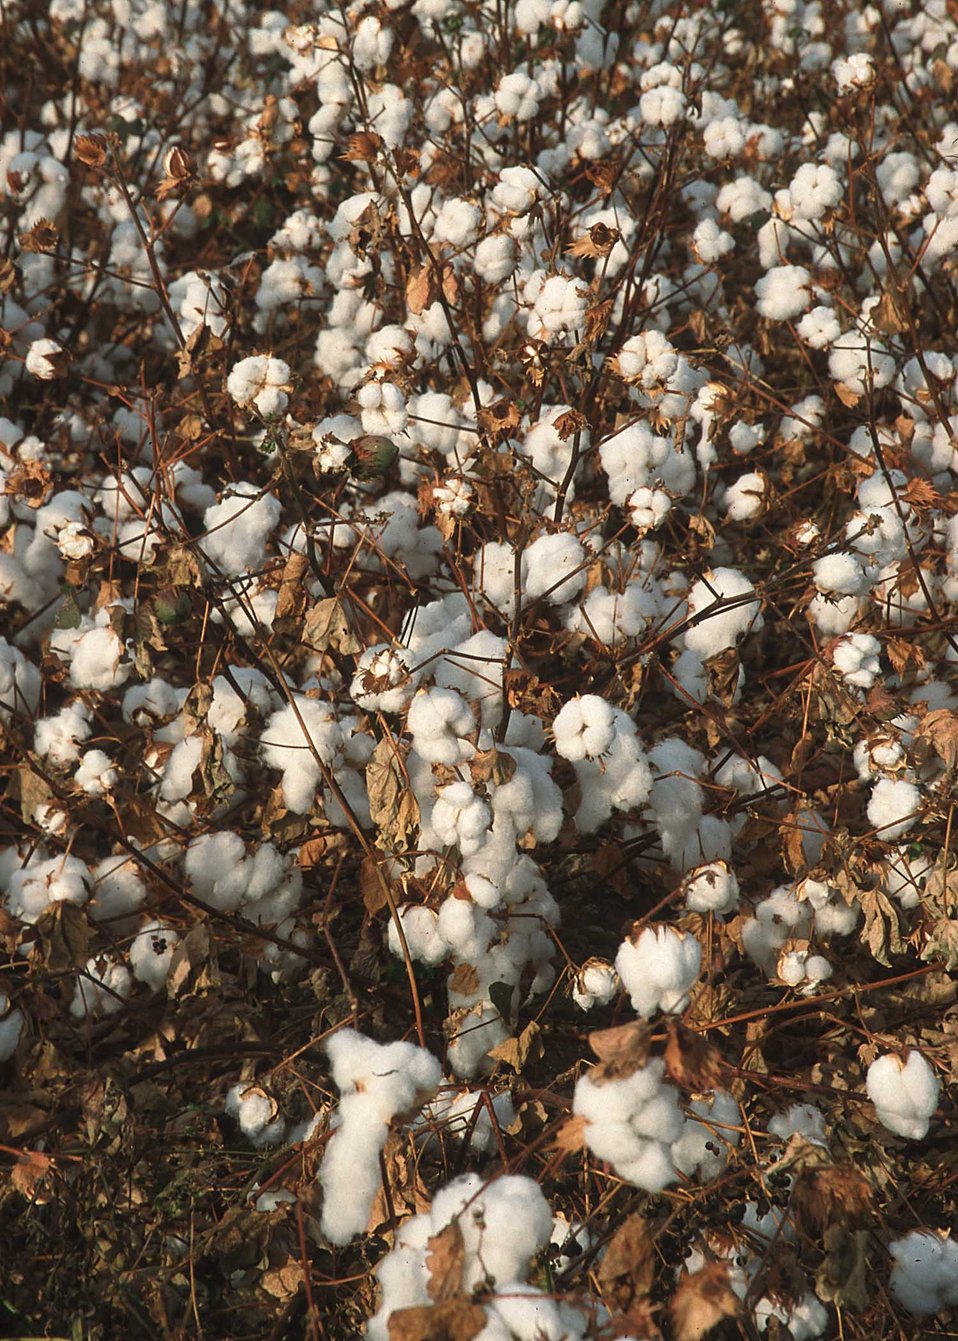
Cotton grown in Northern California.